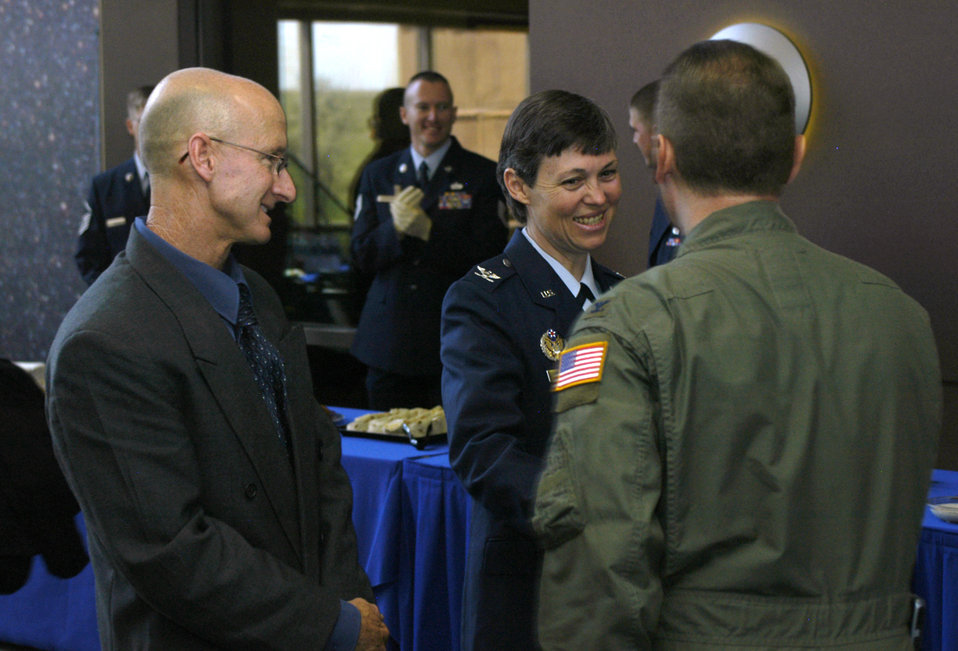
50th Space Wing welcomes new commander

Col. Terry Djuric and her husband, Warren, greet 50th Operations Group commander Col. Clinton Crosier after the 50th Space Wing change-of-command ceremony at Schriever Air Force Base, Colo., May 22. Colonel Djuric succeeds Col. John Hyten as 50th SW commander.